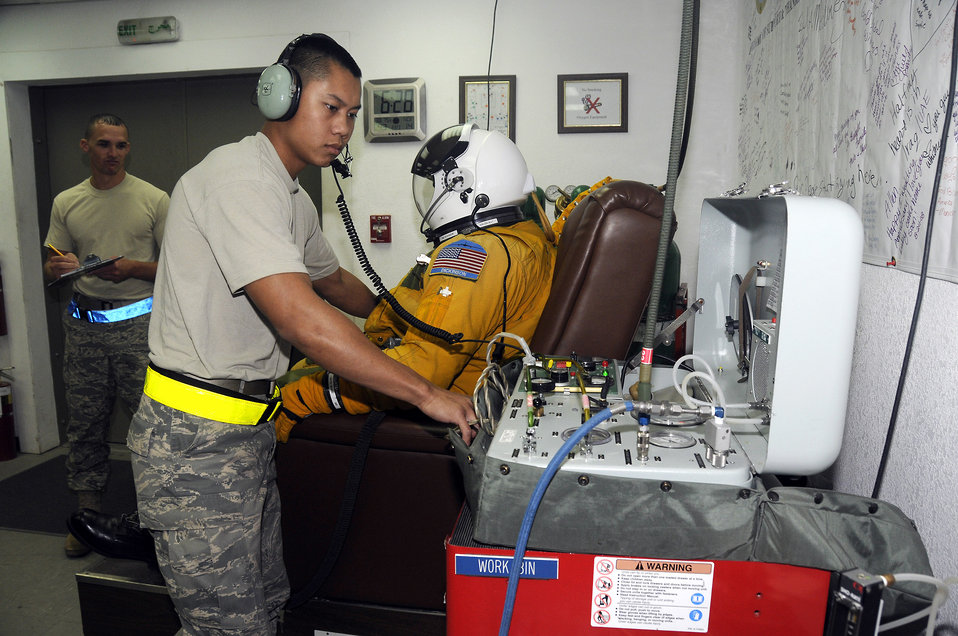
Prepping for high flying

Senior Airman David Sivixay works with Lt. Col. Brian Dickinson on last minute communications and suit pressurization checks while Senior Airman Allen Smith monitors the results Nov. 14. Both are with the 99th Expeditionary Reconnaissance Squadron physiological support division at an air base in Southwest Asia. Colonel Dickinson is a U-2 Dragonlady pilot with the 99th and is responsible for gathering intelligence in the area of responsibility in support of Operation Iraqi and Enduring Freedom.